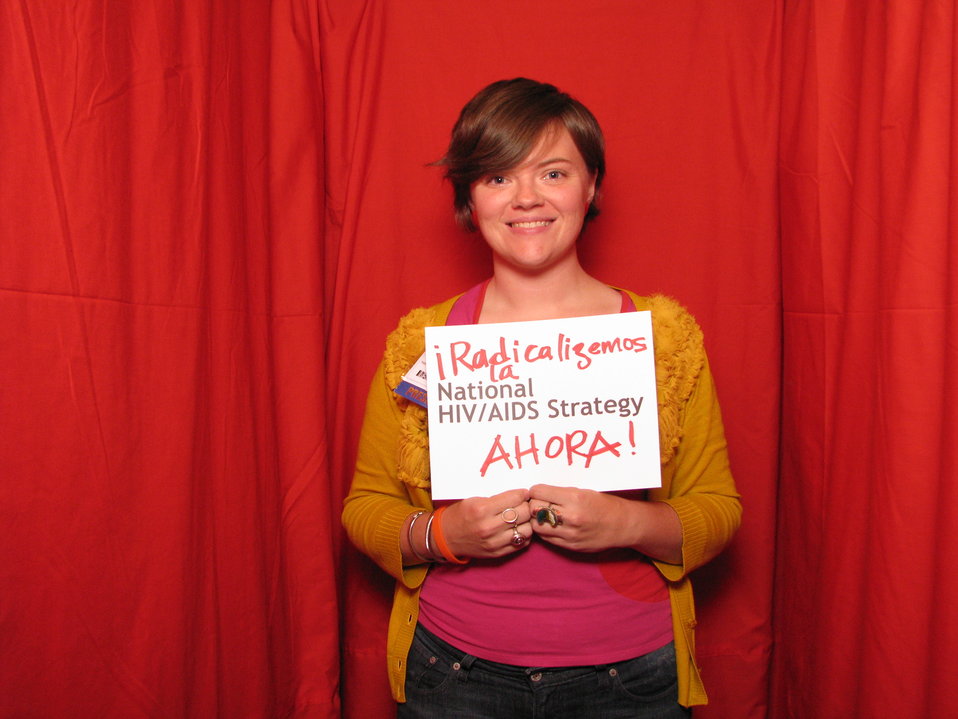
Radicalizemos la National HIV/AIDS Strategy AHORA!

From the AIDS.gov photo booth at the U.S. Conference on AIDS, September 2010 (Orlando, FL).